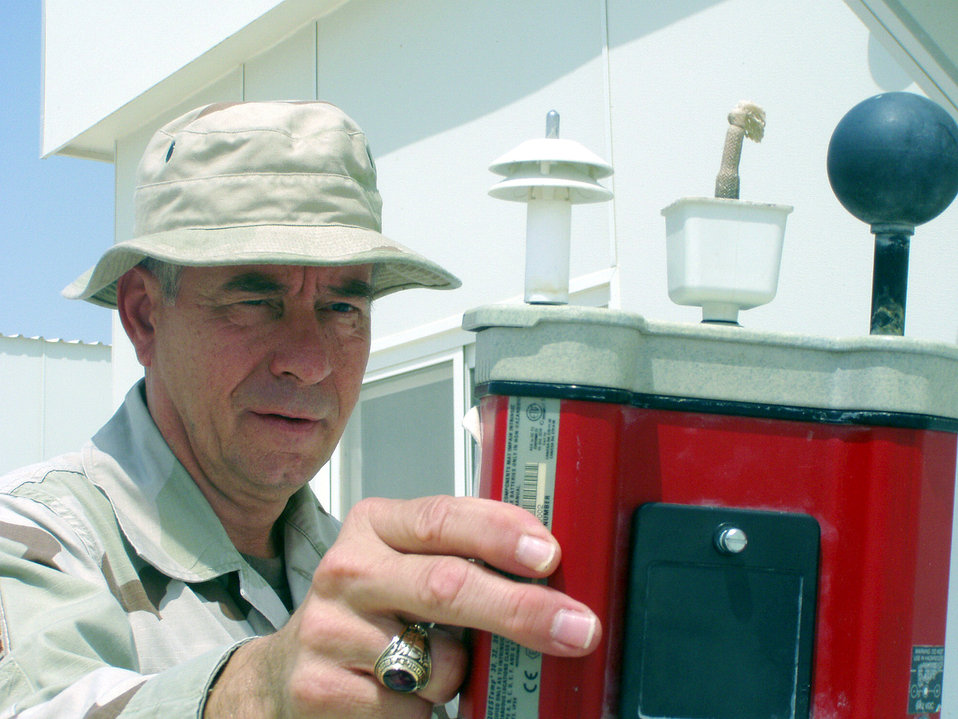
Yep, it's hot

SOUTHWEST ASIA -- Master Sgt. Jim Kinsey reads an environmental monitor that measures an